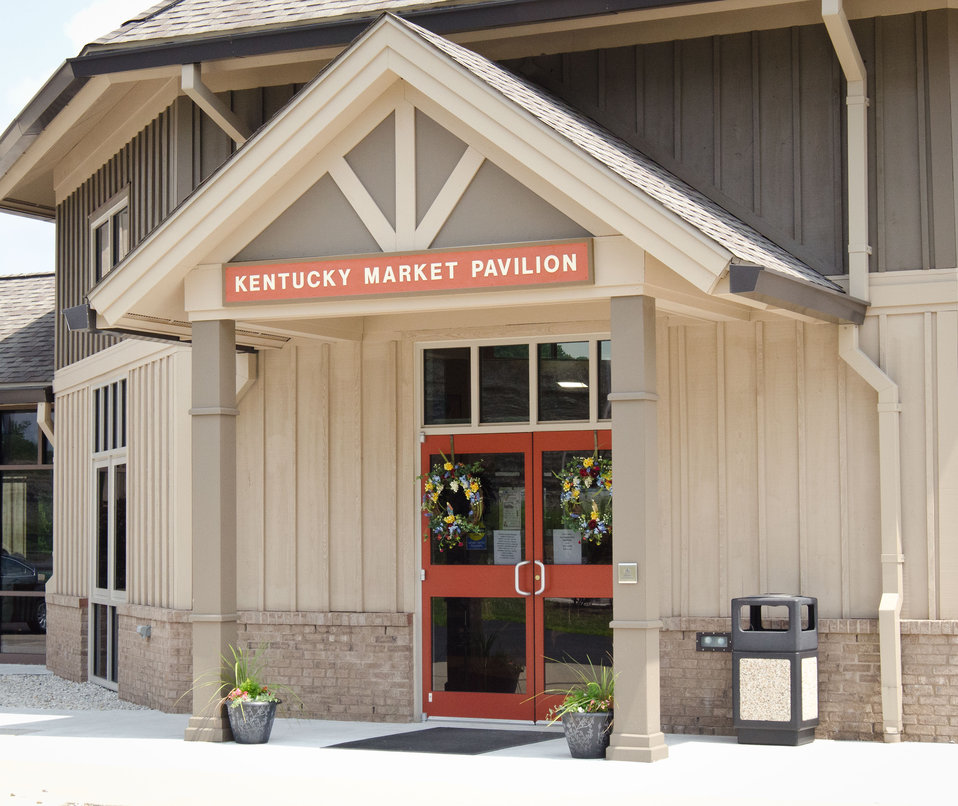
Kentucky Market Pavilion entrance to the Bath County Agricultural Education and Marketing Center, Owingsville, KY, on Friday, July 15, 2011. The Center was the recipient of a $400,000 Rural Business Enterprise Grant. It has given farmers and producers from Bath and surrounding counties the opportunity to manufacture and market their locally grown and locally produced value-added and “Kentucky Proud” branded products, including but not limited to, fresh produce, artisan crafts and specialty food products. The Center is open year-round and allow residents to sell products in four different retail categories, including Kentucky products, regional crafts, “green” groceries and bakery/deli. Several producers expressed their gratitude for Rural Development’s assistance in making the center a reality. The project was made possible through American Recovery and Reinvestment Act of 2009 funding enacted by the 111th United States Congress in February 2009 and signed into law on February 17, 2009, by President Barack Obama.